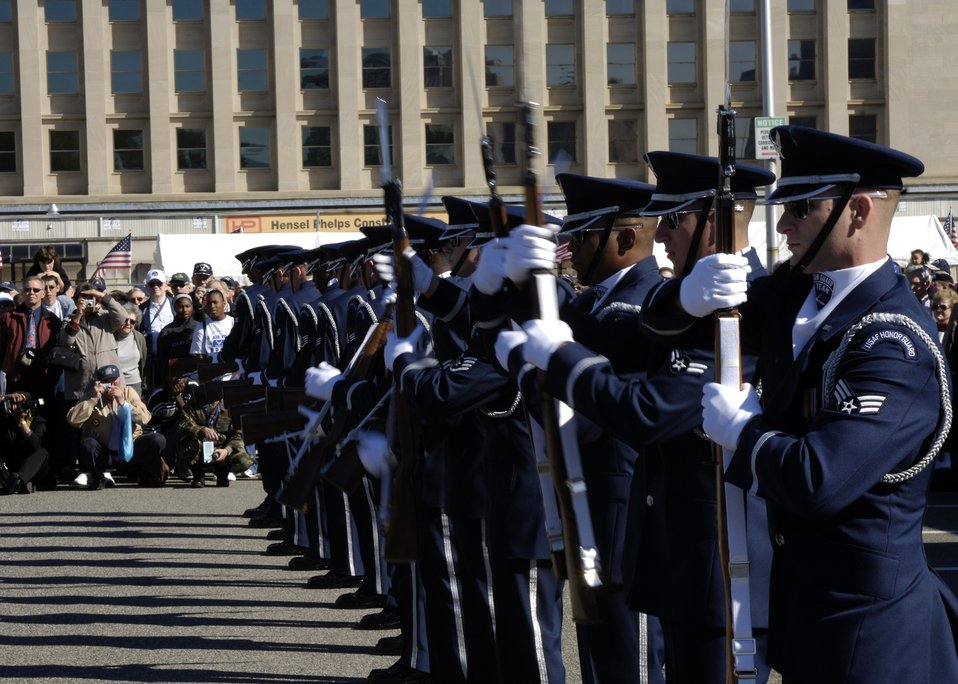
Drill Team Performs

Members of the United States Air Force Drill Team perform during the Air Force open house at the Pentagon on Saturday, Oct. 14, 2006. The open house is running in conjunction with the official ceremony to dedicate the Air Force Memorial. President George W. Bush will join Senior Defense Dept. and Air Force officials in a ceremony to present the memorial to the Nation. Desiged by the late James Ingo Freed the memorial with its three soaring spires inspired by the U.S. Air Force Thunderbirds bomb burst manuever, pays tribute to and honors the patriotic men and women of the U.S. Air Force and its predeccessor organizations. An open house will run near the Pentagon in conjunction with the dedication ceremony which will feature performances by the U.S. Air Force Band, the U.S. Air Force Honor Guard drill team, and will culminate with a concert featuring country music performer LeeAnn Womack.